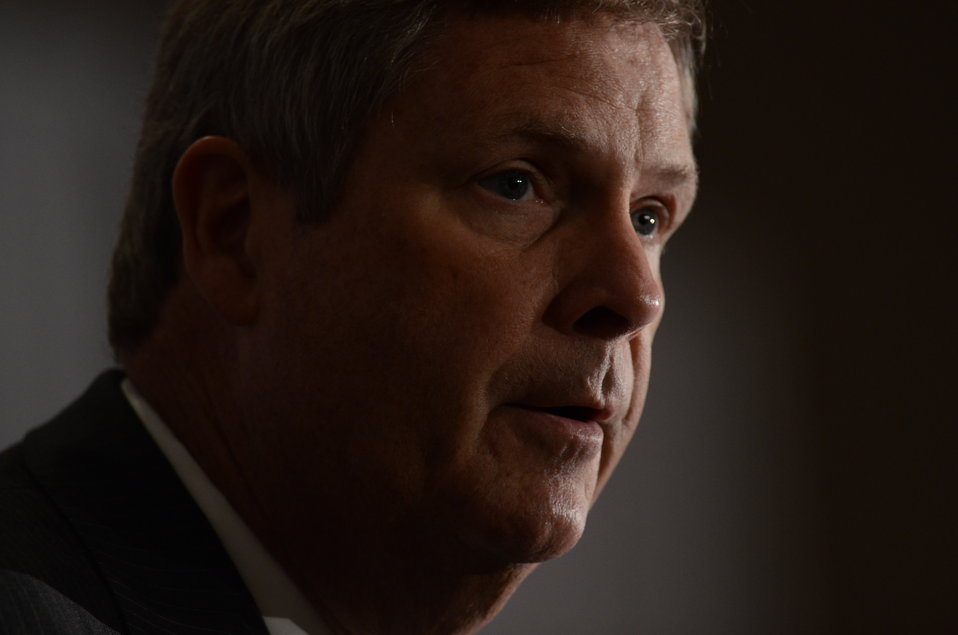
Agriculture Secretary Tom Vilsack speaks at the International Association for Food Protection (IAPP) 100th annual meeting in Milwaukee, WI, on Wednesday, August 3, 2011. IAPP is committed to providing members worldwide with a forum to exchange information on protecting the global food supply.